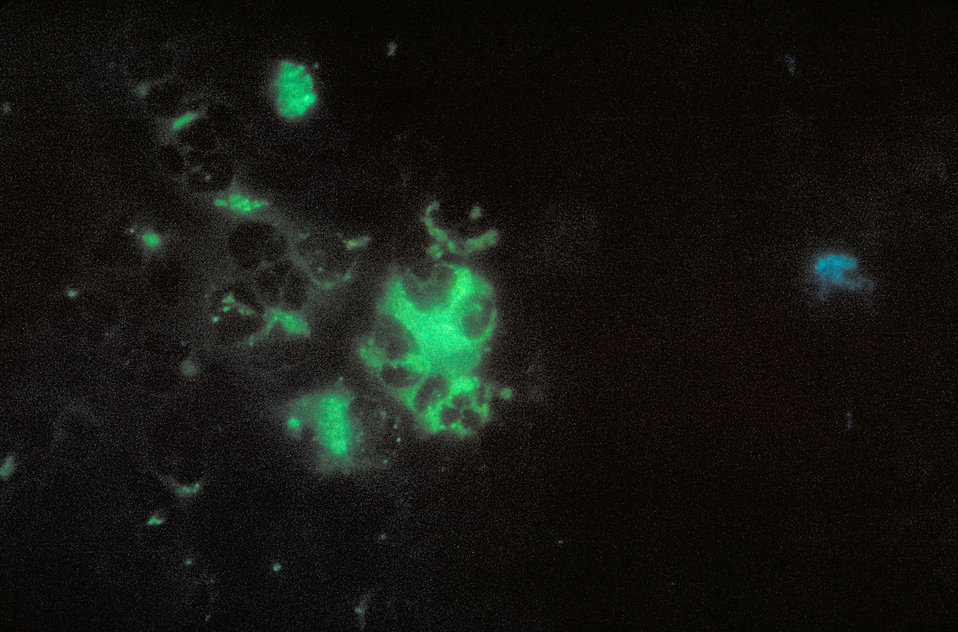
This direct FA stained mouse brain impression smear reveals the presence of the bacterium Chlamydophila psittaci,, formerly Chlamydia psittaci.